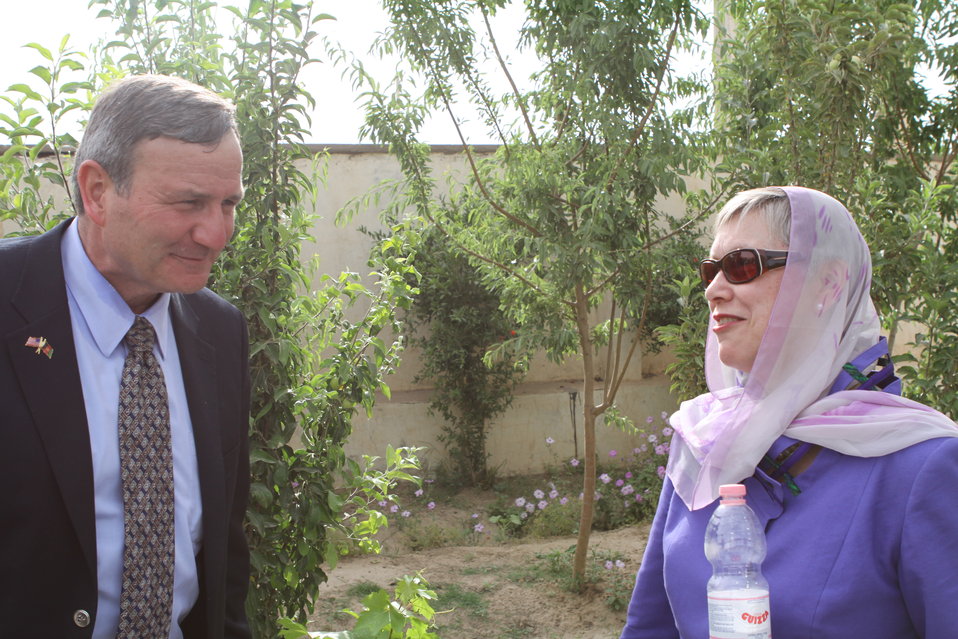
100525 Hirat Marble Conference 878